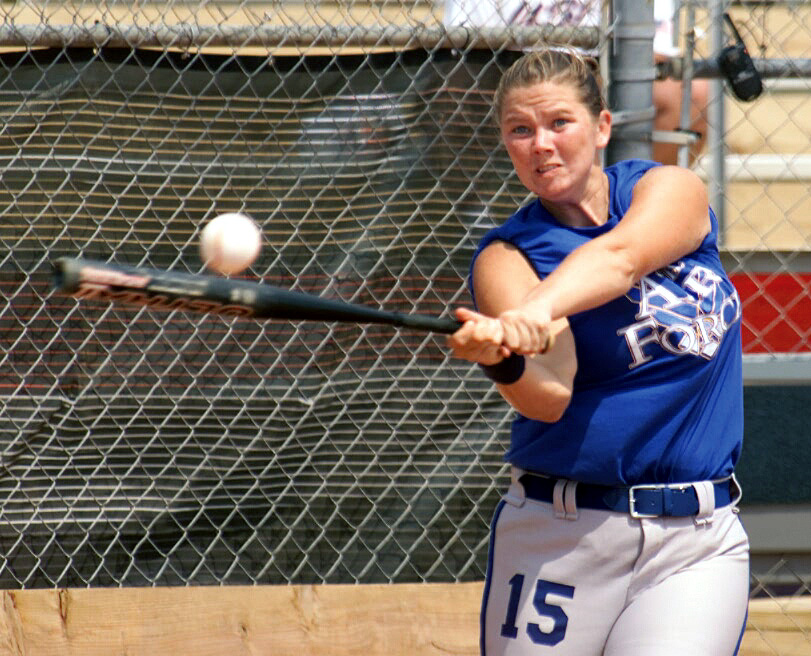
Air Force wins championship

EGLIN AIR FORCE BASE, Fla. -- Air Force Senior Airman Jamie Thompson from Dover Air Force Base, Del., nails the ball during a game against the Army in their third and final match up. Thompson was named to the 2003 All-Tournament Team, as well as the Armed Forces Team.